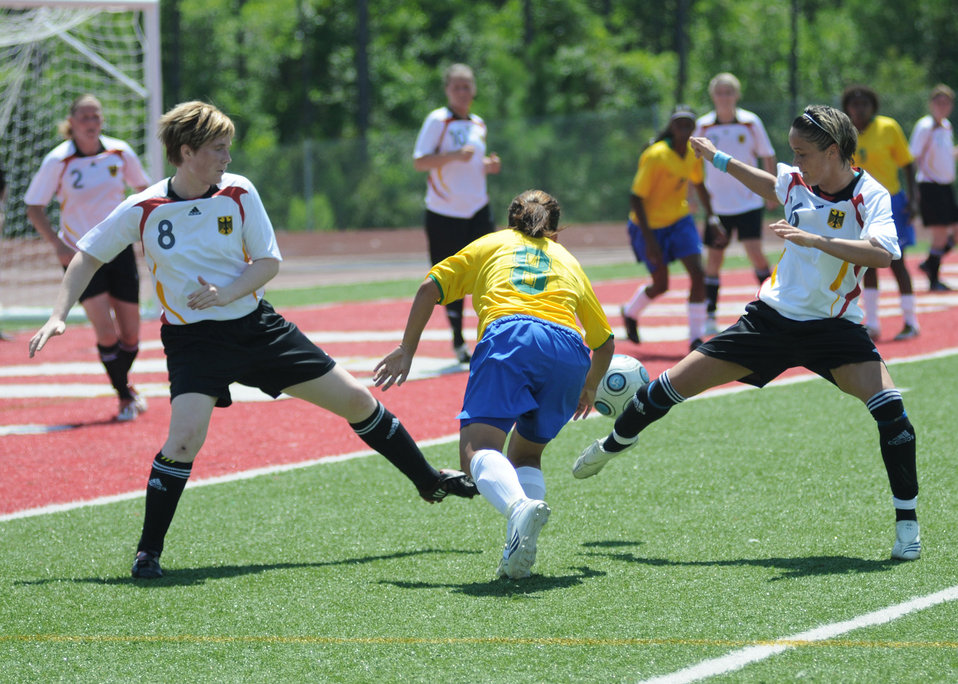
Keesler officials host Women's Soccer Championship

Soccer players from Germany and Brazil compete during the 5th Counseil Du International Sports Militaire Women's Soccer Championship at Biloxi High School Stadium June 7 in Mississippi. The CISM tournament, hosted by officials from Keesler Air Force Base, Miss., includes teams from Brazil, Canada, France, Germany, The Netherlands, South Korea and the United States.